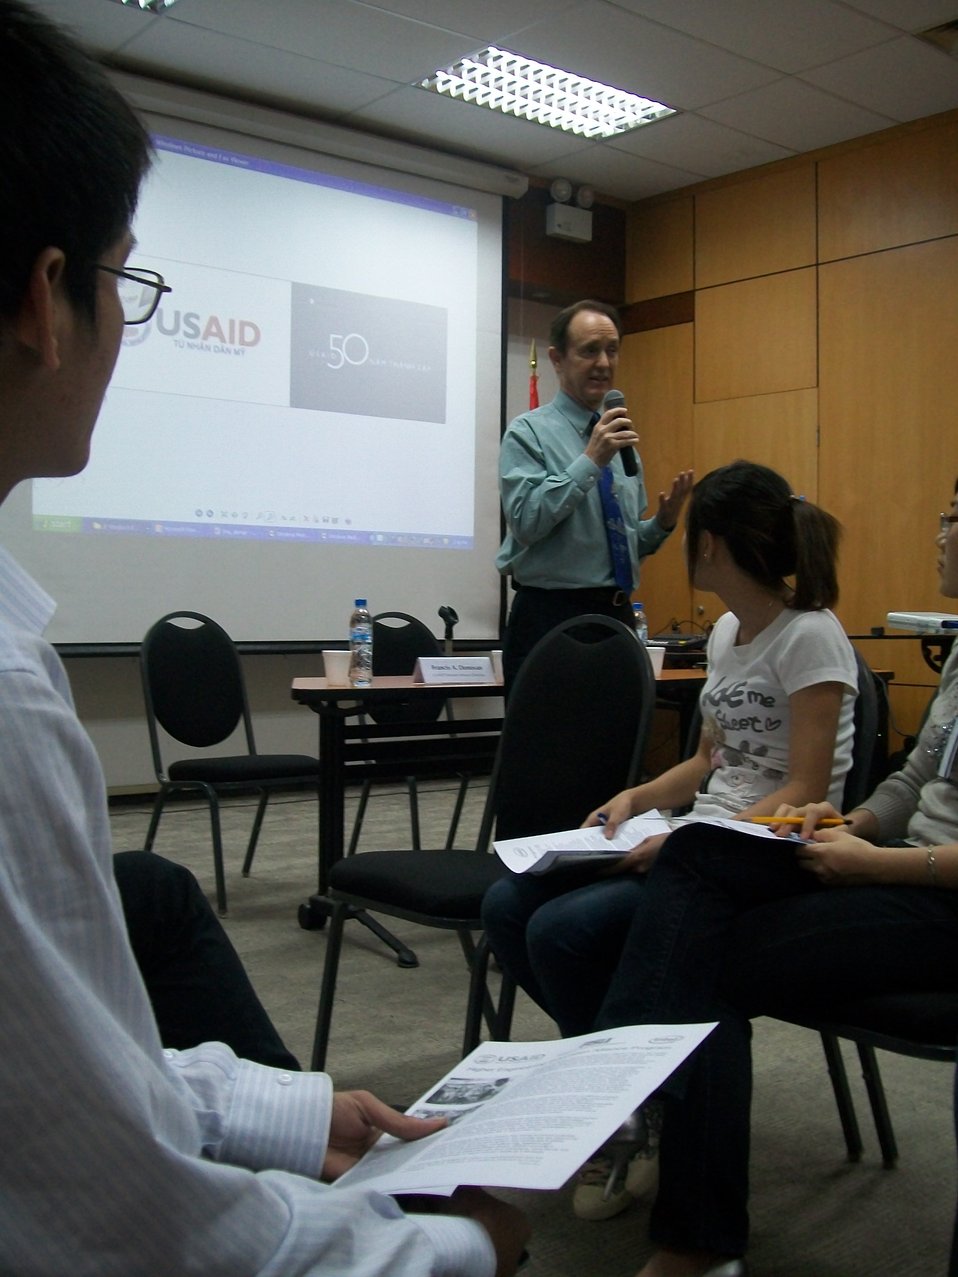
American Center and USAID host Debate Club on Higher Education

USAID/Vietnam Mission Director Francis Donovan address students and discusses the USAID-supported Higher Engineering Education Alliance Program with Arizona State University, Intel, and others.